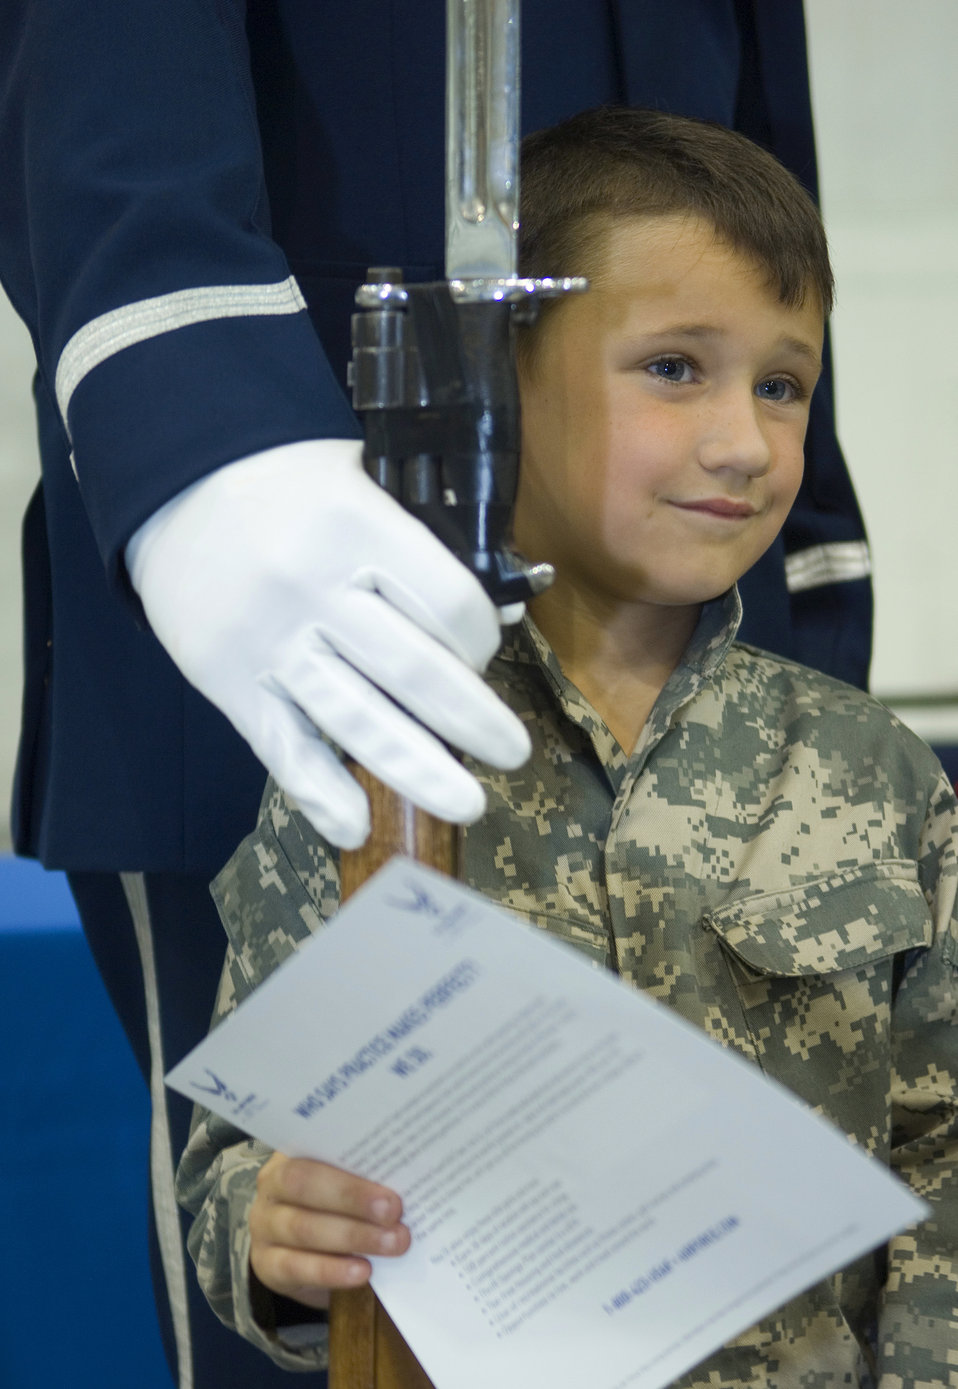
Air Force Week mixes past, present, future at museum

Vonn Smith collects autographs and has a photo taken with a member of the Air Force Honor Guard drill team during Air Force Week in the Heartland Aug. 13 at the Strategic Air and Space Museum in Ashland, Neb. Museum officials hosted a day dedicated to the legacy of airpower providing special Air Force demonstration teams and displays.